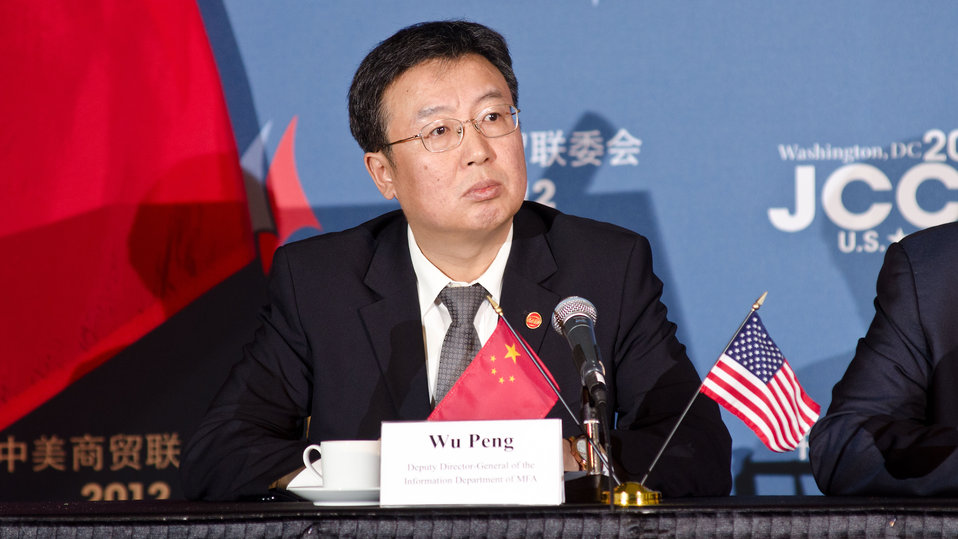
China’s Ministry of Foreign Affairs Information Department Deputy Director-General Wu Peng listens to a question from international news media journalists at the 23rd Session of the U.S. China Joint Commission on Commerce and Trade (JCCT) press conference at the Andrew W. Mellon Auditorium in Washington, D.C. on Wednesday, Dec. 19, 2012. The JCCT holds high-level plenary meetings on an annual basis to review progress made by working groups that focus on a wide variety of trade issues. These working groups meet throughout the year to address topics such as intellectual property rights, agriculture, pharmaceuticals and medical devices, information technology, tourism, commercial law, environment, and statistics.